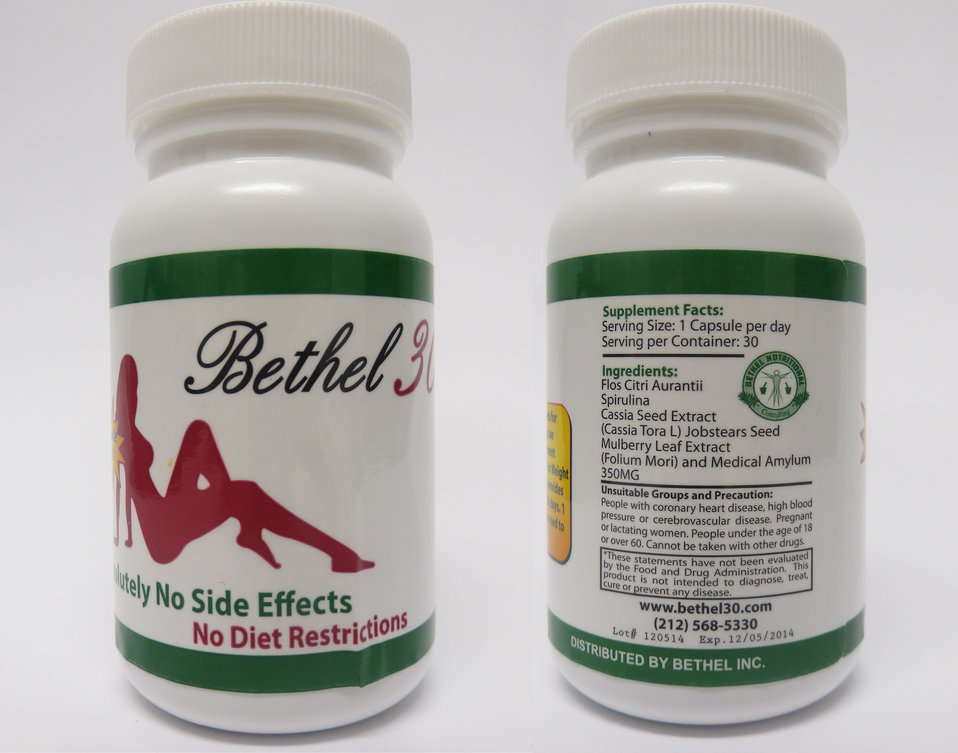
Bethel 30

June 11, 2013 - The FDA is advising consumers not to purchase or use 'Bethel 30 ,' a product promoted and sold for weight loss. The product was found to contain undeclared sibutramine and phenolphthalein. For more information, go to www.fda.gov/Safety/Recalls/ucm356233.htm.

And read this Consumer Update: Beware of Fraudulent ‘Dietary Supplements’